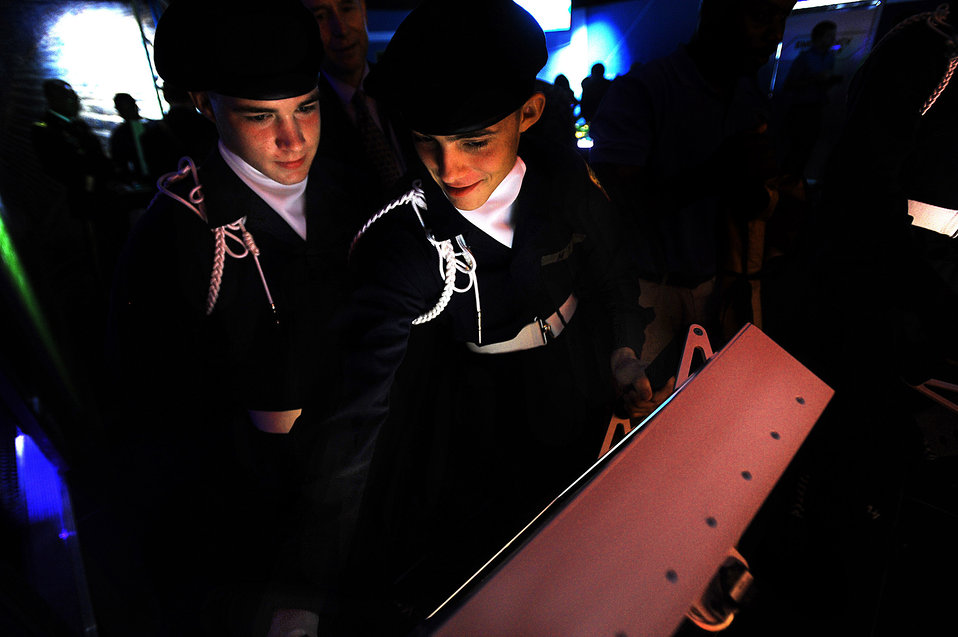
Mobile lab

Cadets from the Maryland Freestate ChalleNGe Academy participate in one of the interactive components of the National Guard's mobile Energy Lab during the unveiling Sept. 30, 2010 at the Ronald Reagan Building and International Trade Center in Washington, D.C. The Energy Lab, part of the guard's Mobile Learning Center program, is designed to promote interest in the sciences and technology fields through interactive, game-based scenarios. The lab is scheduled to travel to throughout 10 states as a way to encourage and develop interest among high school juniors and seniors in the sciences.